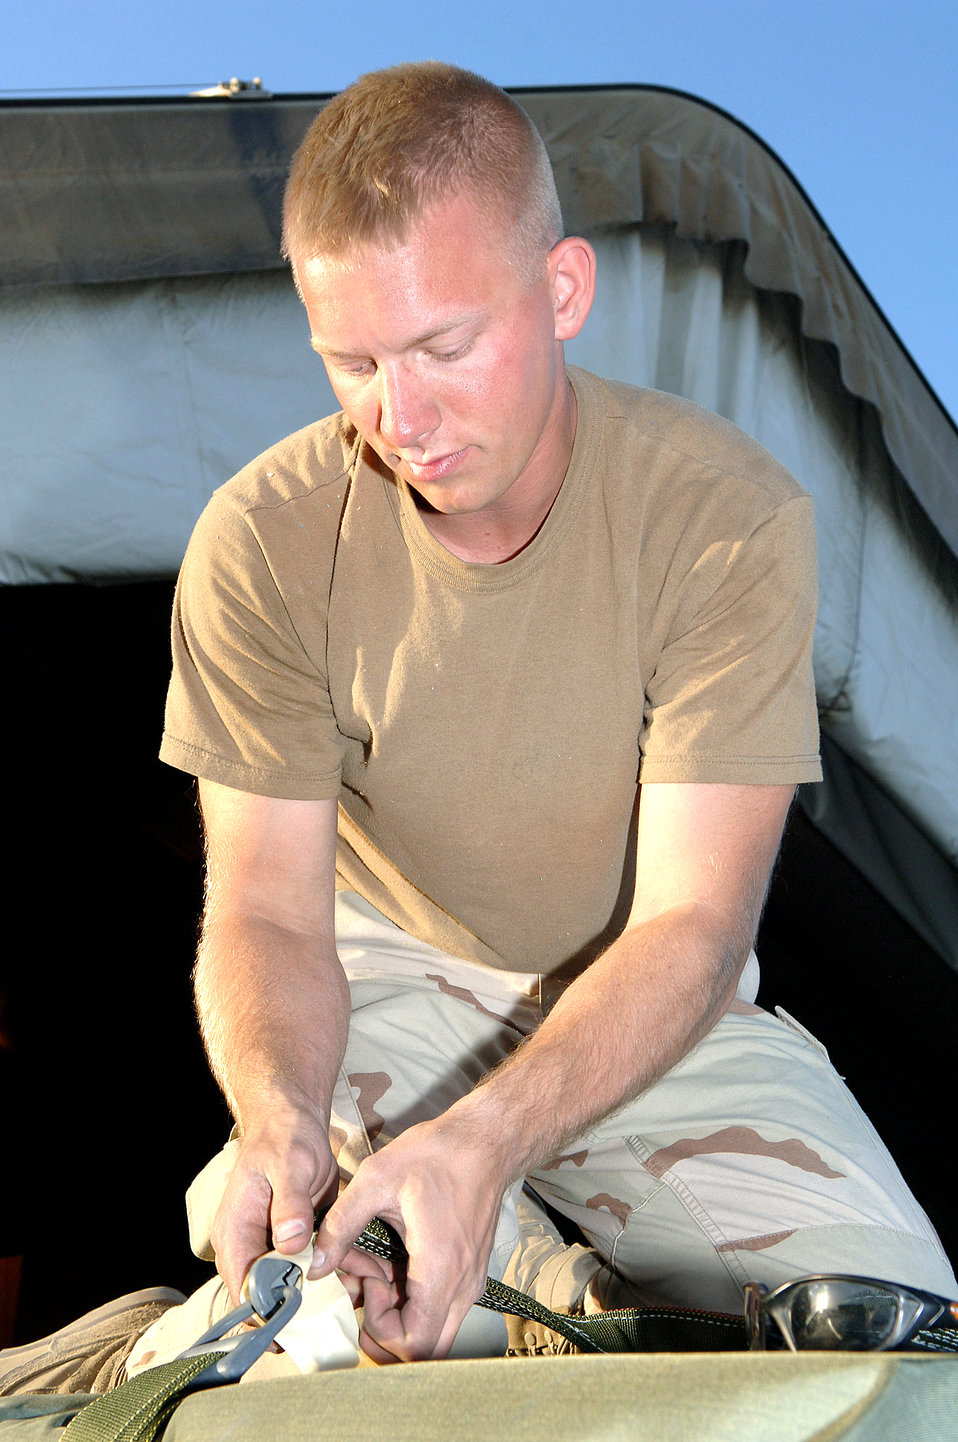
Pakistan relief

BAGRAM AIR FIELD, Afghanistan (AFPN) -- Spc. Charles Laborn, a parachute rigger, secures a tie on a containerized delivery system on the flightline here. Soldiers get help from Airmen and Sailors here to build the delivery systems to support the multinational humanitarian assistance aid to the victims of the earthquake that struck Pakistan Oct. 8. Specialist Laborn is deployed here from the 82nd Airborne Division at Fort Bragg, N.C.